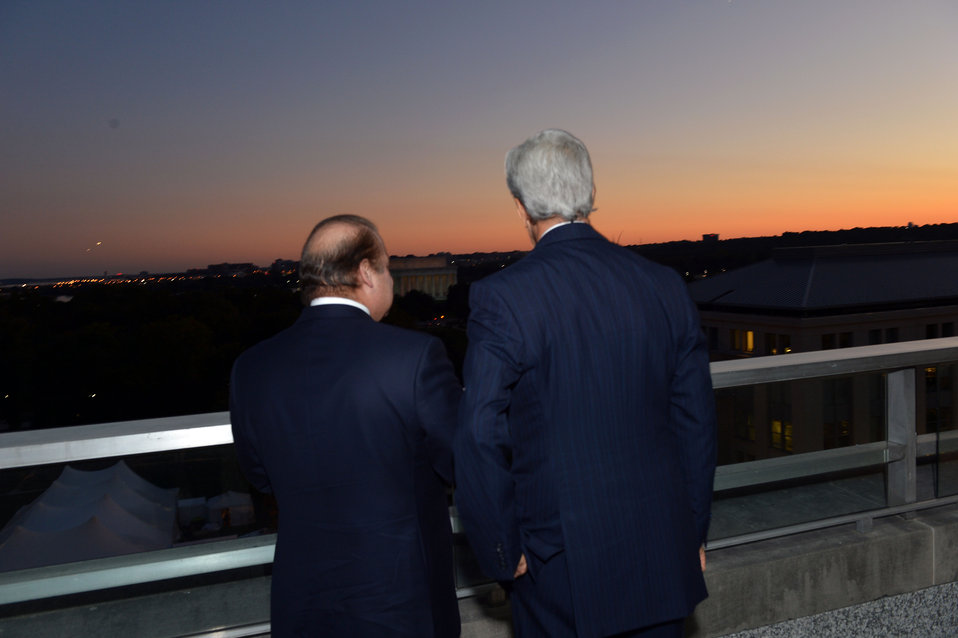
Secretary Kerry and Pakistani Prime Minister Sharif Look at the Monuments

U.S. Secretary of State John Kerry points out historic monuments along the National Mall to Pakistani Prime Minister Nawaz Sharif after their bilateral meeting at the U.S. Department of State in Washington, D.C., on October 20, 2013.